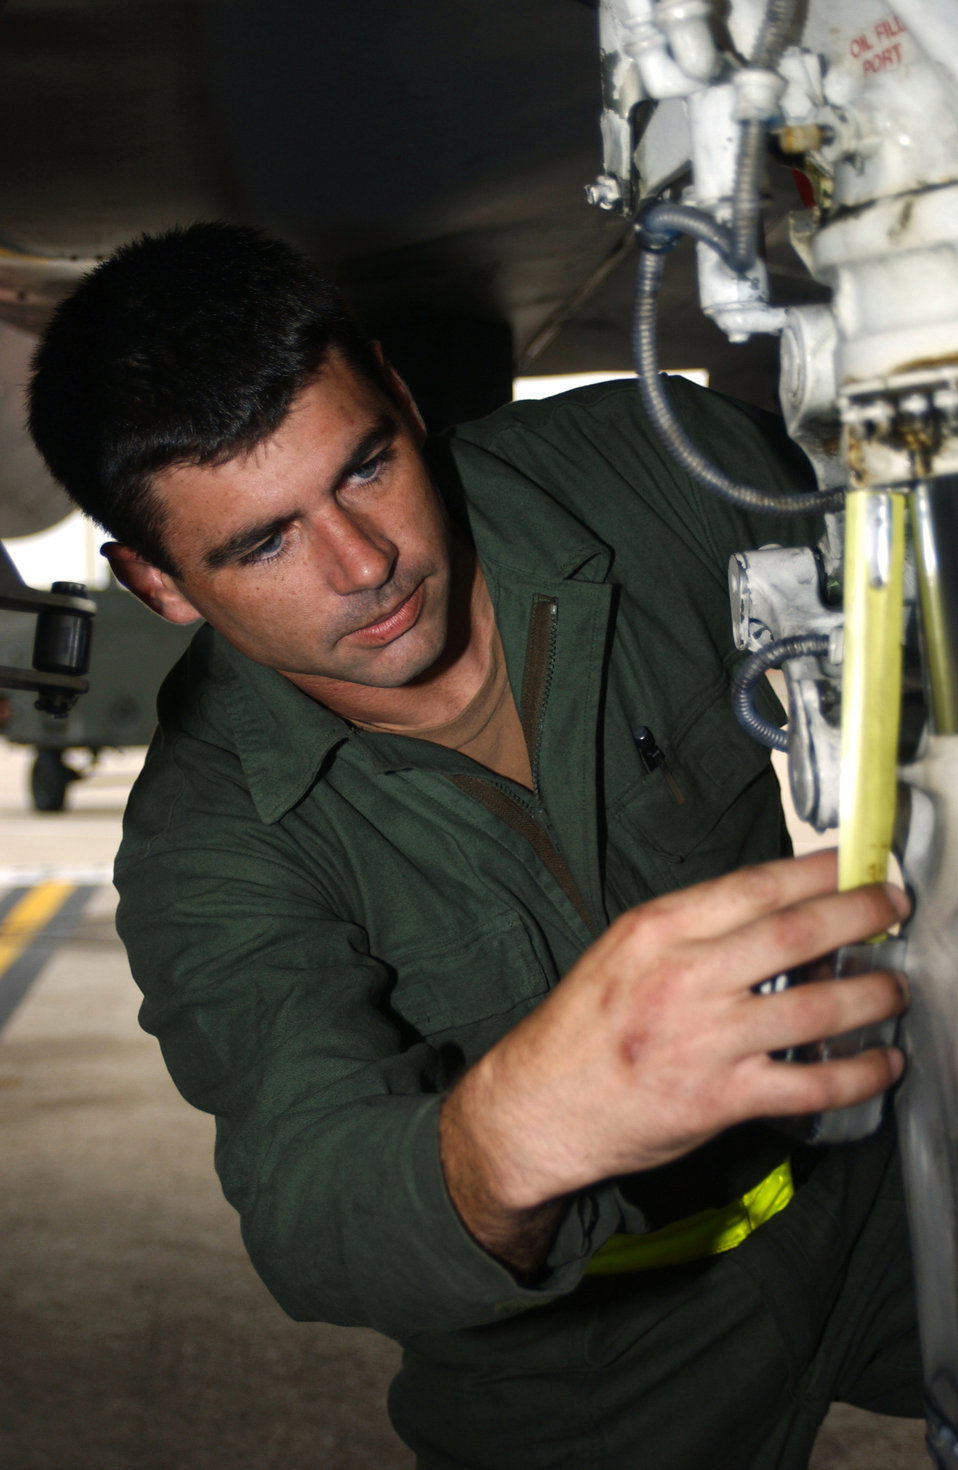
Measuring the strut

SEYMOUR JOHNSON AIR FORCE BASE, N.C. -- Tech. Sgt. Edwin Williams measures the right main strut on an F-15E Strike Eagle during the base's operational readiness exercise here Oct. 27. Sergeant Williams is assigned to the 336th Aircraft Maintenance Unit.